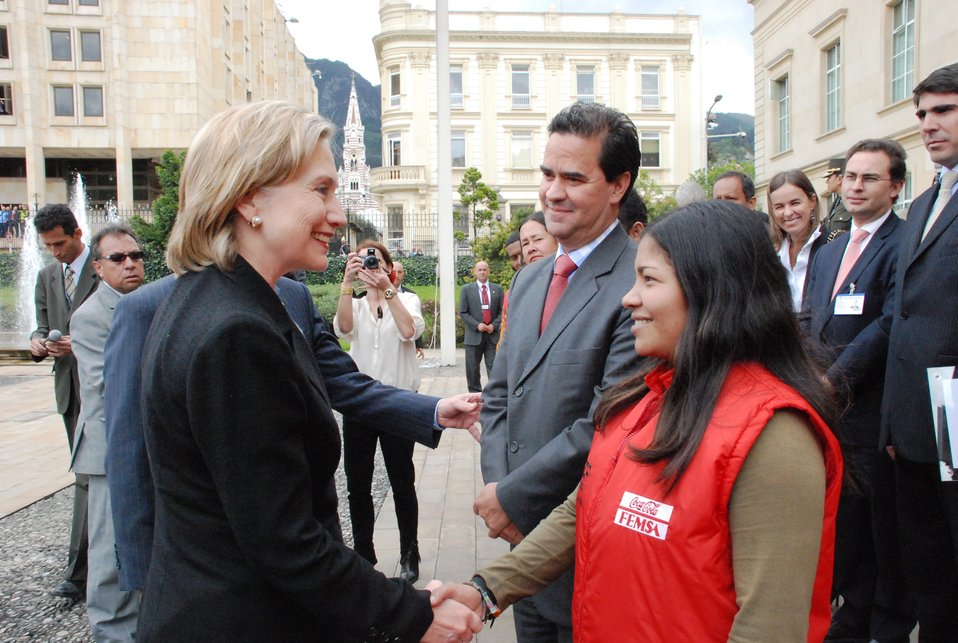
Secretary Clinton Is Greeted By a Former Rebel

U.S Secretary of State Hillary Rodham Clinton is greeted by a former rebel in the Armas Plaza at Casa de Nariño in Bogotá, Colombia June 9, 2010.